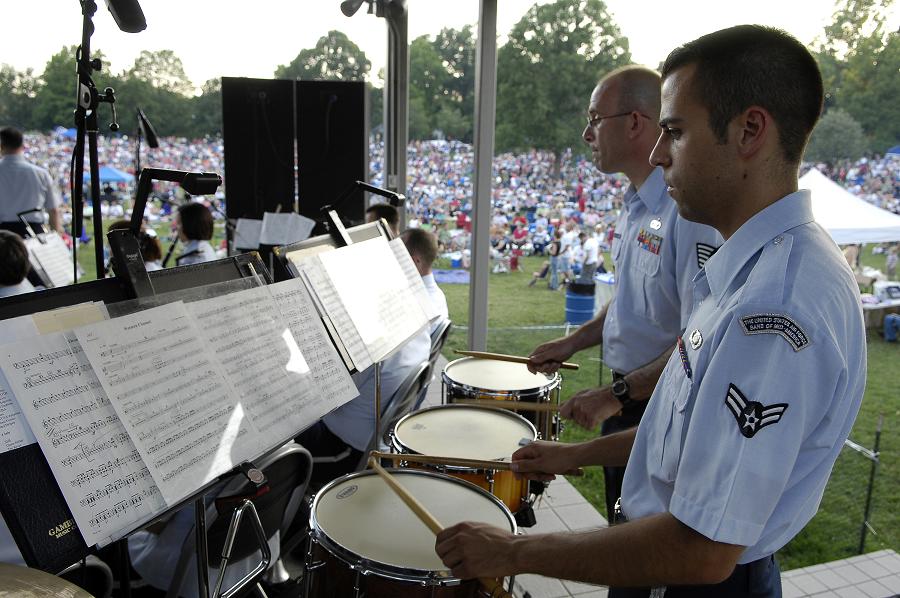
Air Force Week St. Louis

Percussionist, Airman 1st Class Joe Hadacek and Tech Sgt. Paul Shaw, play the drums for the U.S. Air Force Band of Mid-America during a performance at the Jefferson Barrack Blast, July 3, 2007. St. Louis County, in partnership with the Air Force during Air Force Week, put on the blast, entertaining the more than 20,000 in attendance.